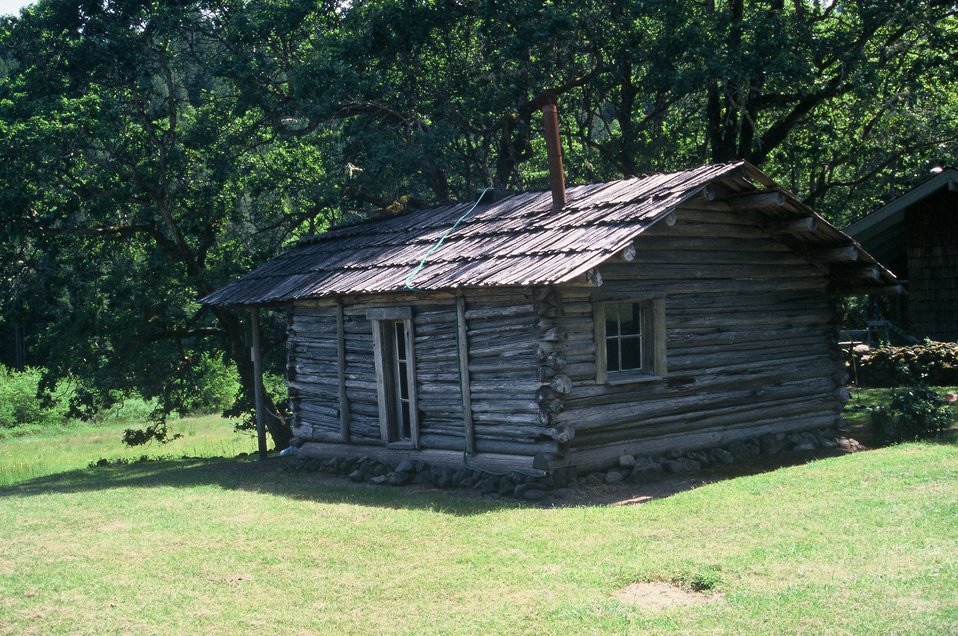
Wild section of the Rogue River from Grave Creek to Foster Bar May 19 to May 22.